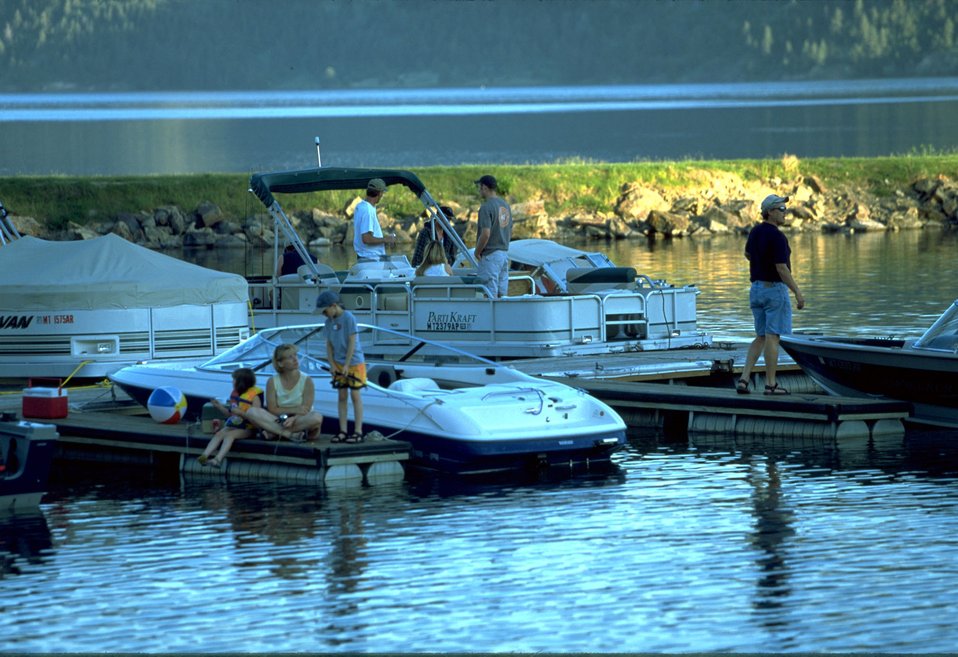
People enjoying a day at Holter Lake